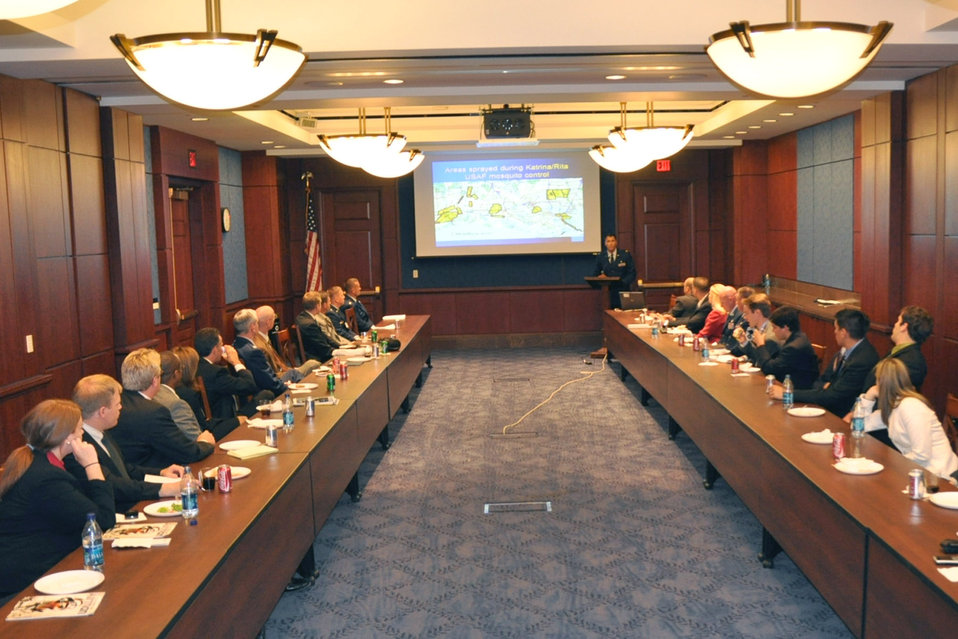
Reservists talk to Congress

Maj. Mark Breidenbaugh speaks to a group of congressional staffers June 8, 2010, in Washington. Major Breidenbaugh and a small team of reservists from the 910th Airlift Wing spoke to the group about the unit's aerial spray mission and the wing's recent operations in the Gulf of Mexico. Major Breidenbaugh is an entomologist assigned to the 910th Airlift Wing, based at Youngstown Air Reserve Station, Ohio.